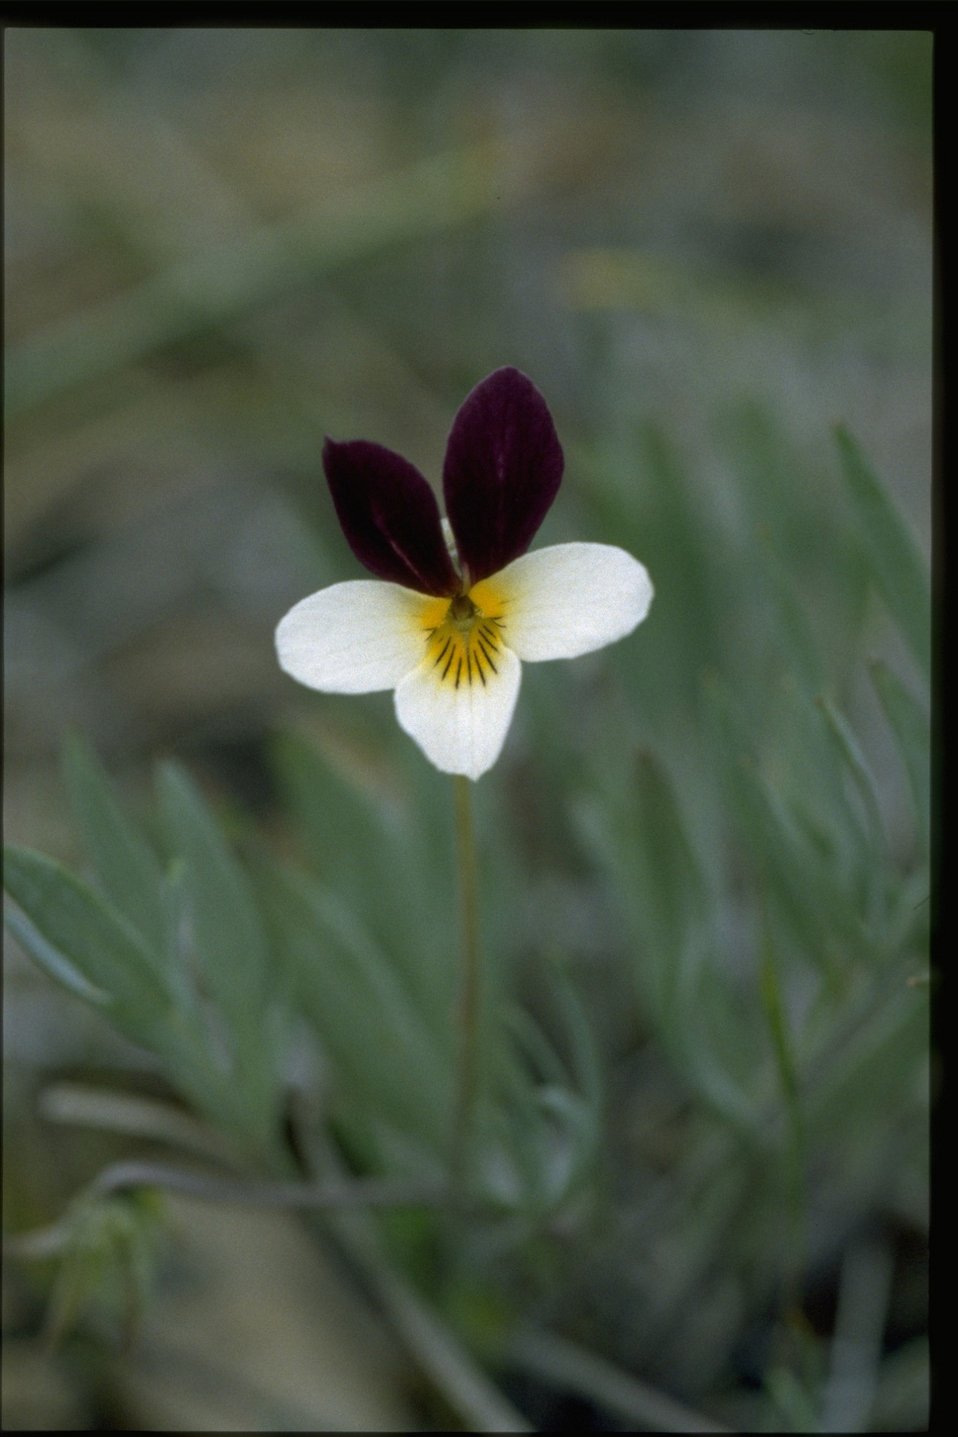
Medium shot of Violii hallii.